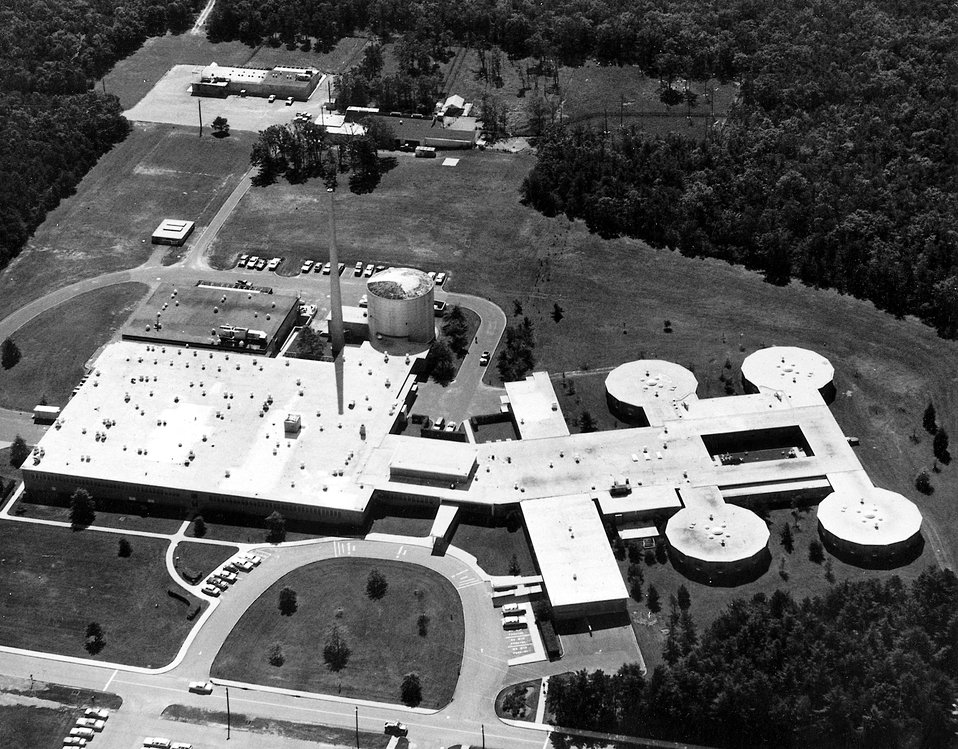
Aerial view of the U.S. Atomic Energy Commission's Brookhaven National Laboratory Medical Research Center. c. 1973